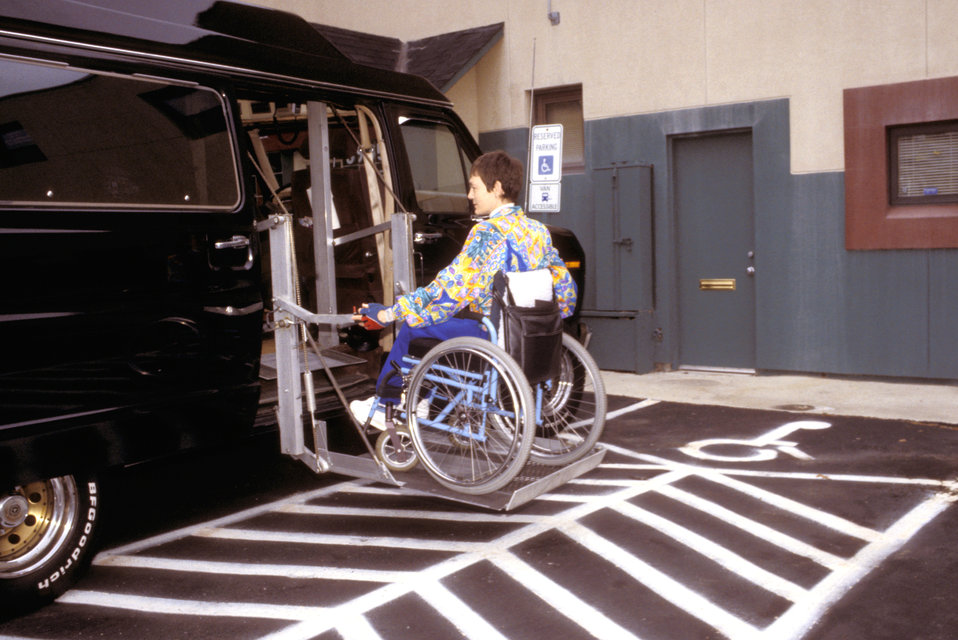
This was the second of six images (PHIL# 9068 - 9073) depicting a wheelchair-seated woman in the process of exiting a wheelchair lift-equipped van parked in a van-accessible parking space. The space displayed both a pole-mounted sign, as well as a designated ground symbol, each adorned with the international symbol of accessibility. In addition, a wide aisle next to the van's parking space had been defined by striping on the ground, allowing ample space for the person using the side-mounted lift to exit safely and efficiently. The images showed the individual having first backed onto the lift, then descending to the ground. The woman then exited onto the striped space next to the van.